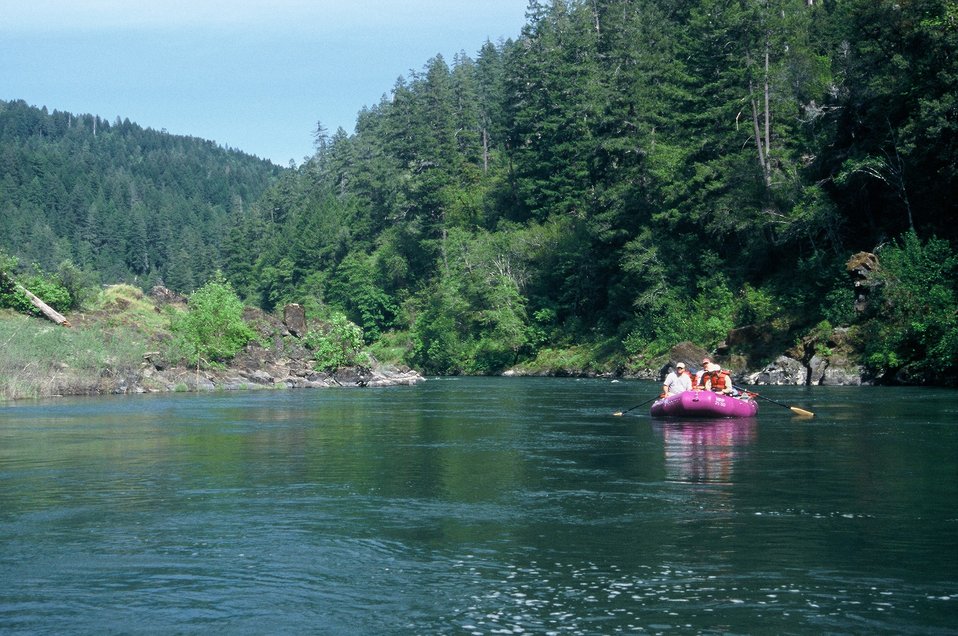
Wild section of the Rogue River from Grave Creek to Foster Bar May 19 to May 22.